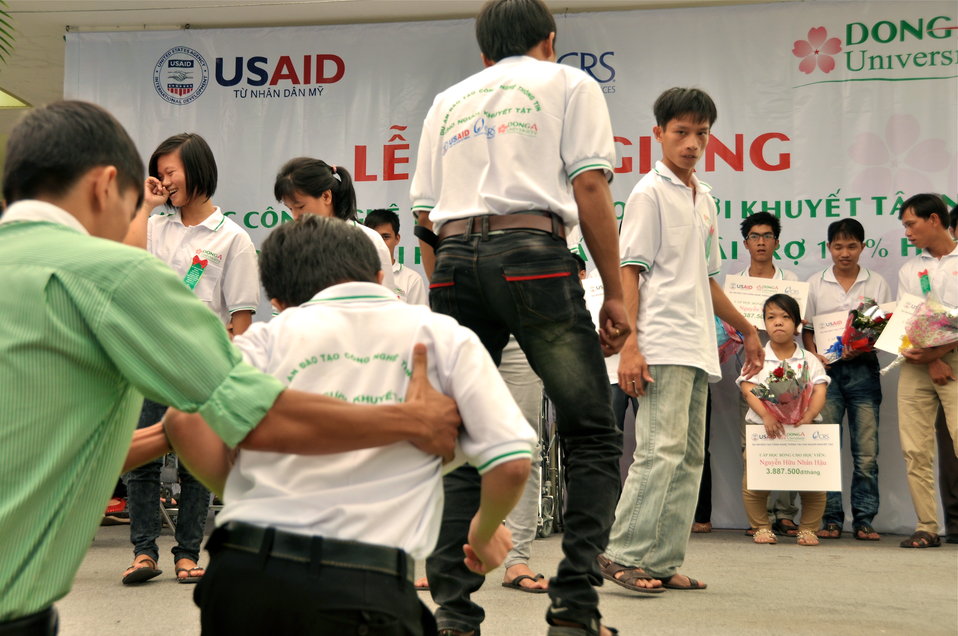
New class of students starts at Dong A Univeristiy with support from USAID and CRS

Photo: @USAIDVietnam
December 3, 2012